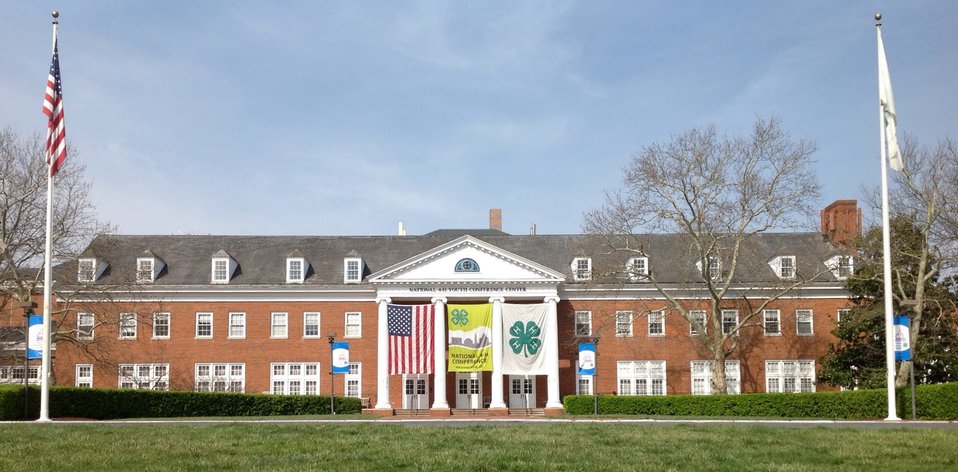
National 4-H Youth Conference Center where Agriculture Secretary Tom Vilsack spoke with National Youth Leadership, on Monday, April 8, 2013, in Chevy Chase, MD.